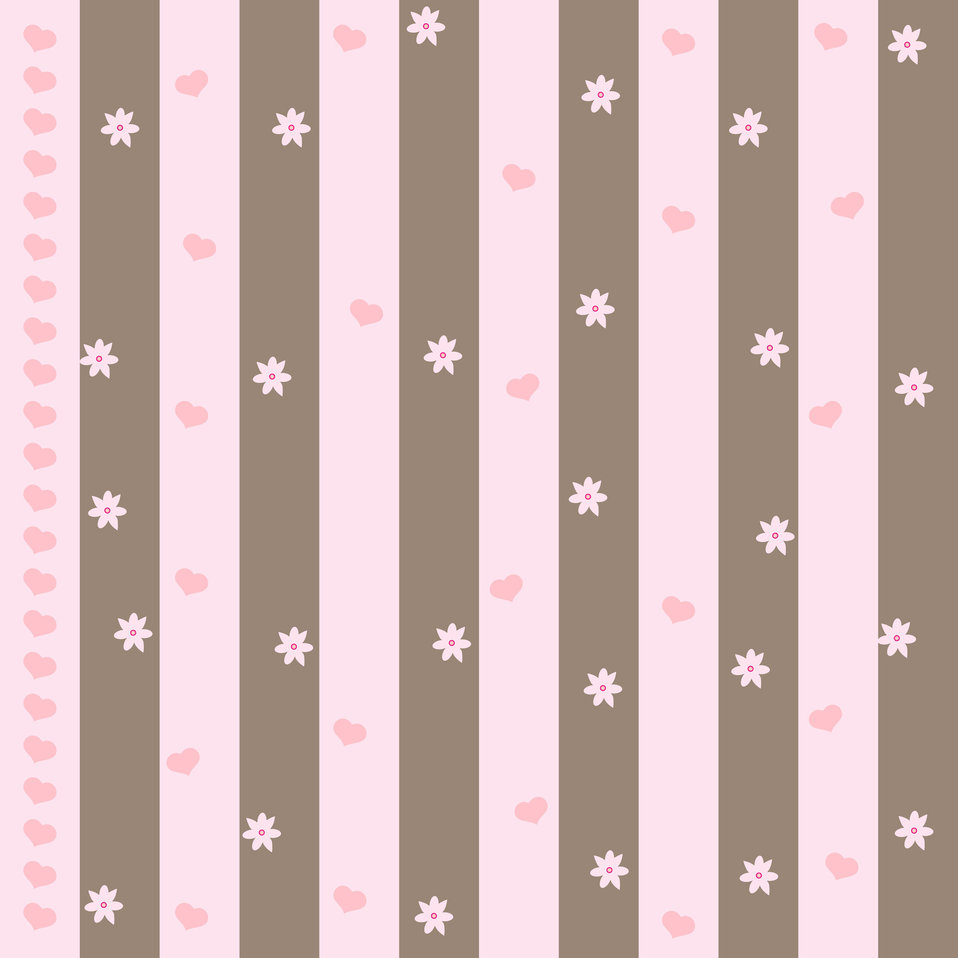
Hearts & flowers background

Pink and brown stripes hearts and flowers background.